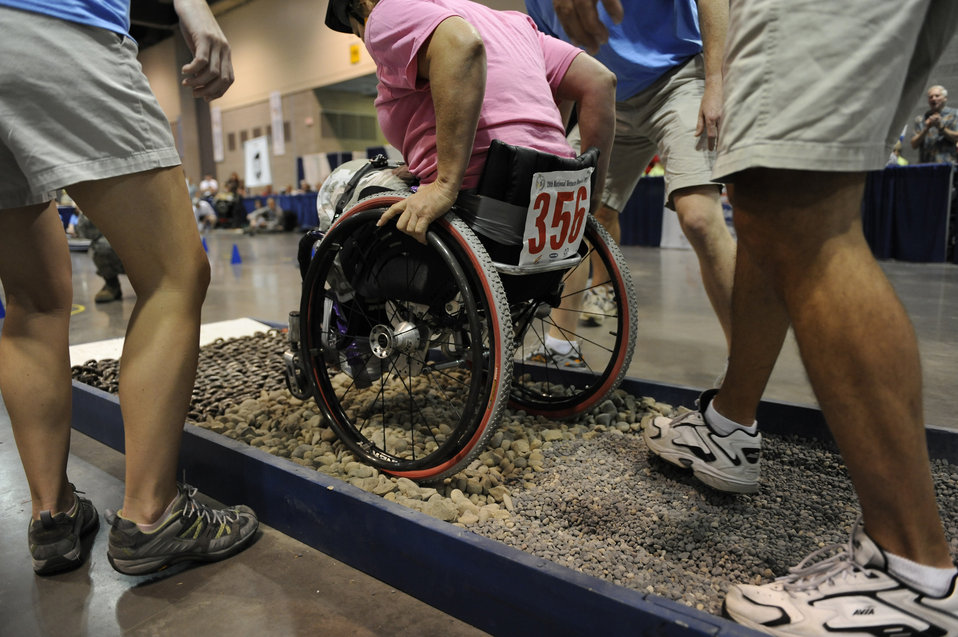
Volunteers ensure success at Veterans Wheelchair Games

Patricia LaBar goes through rocks and sand as she competes in the slalom super G competition during the 29th National Veterans Wheelchair Games July 16 in Spokane, Wash. Ms. LaBar is an Army veteran and resides in Dallas.